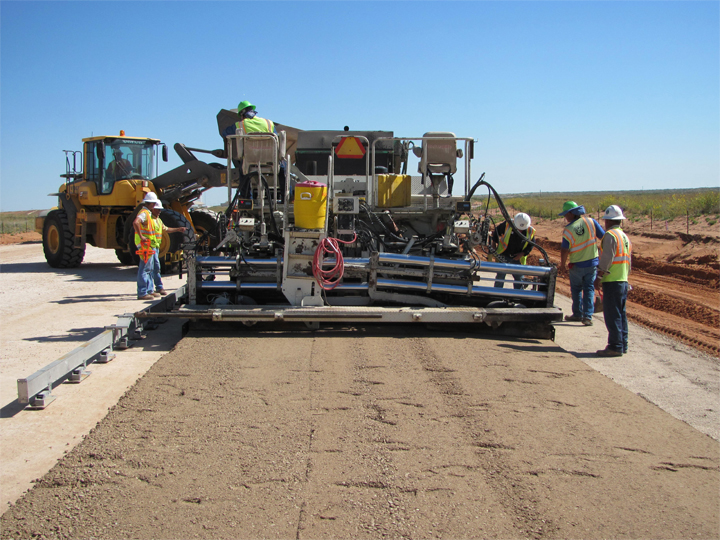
South Access Road Reconstruction

The reconstruction of a 3.8-mile portion of the South Access Road was one of the Waste Isolation Pilot Plant’s 2010 Recovery Act accomplishments.